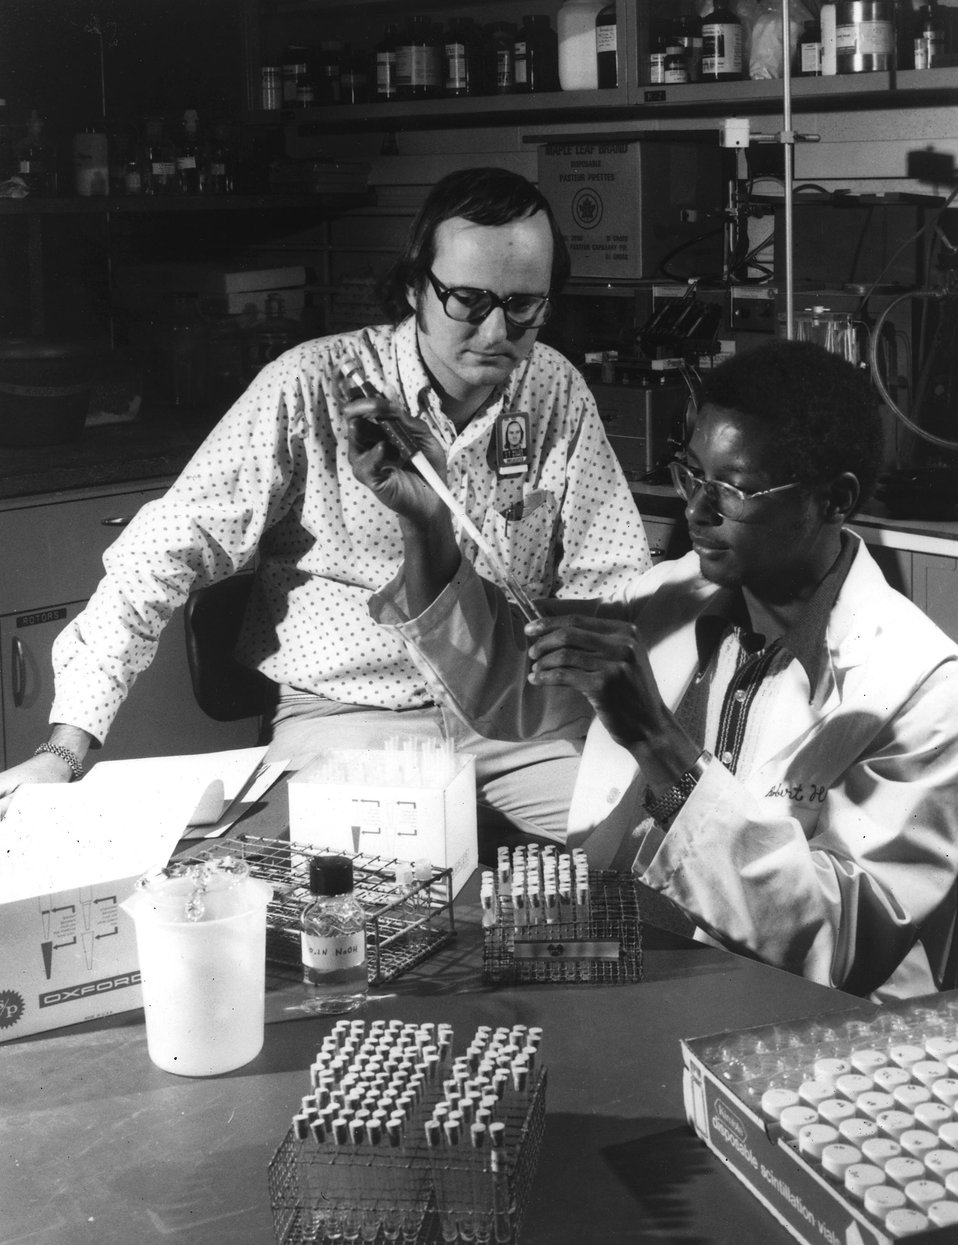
Two students in the University of Tennessee - Oak Ridge Graduate School of Bio-medical Studies perform an assignment at U.S. Atomic Energy Commission's Oak Ridge National Laboratory Biology Division. c. 1974